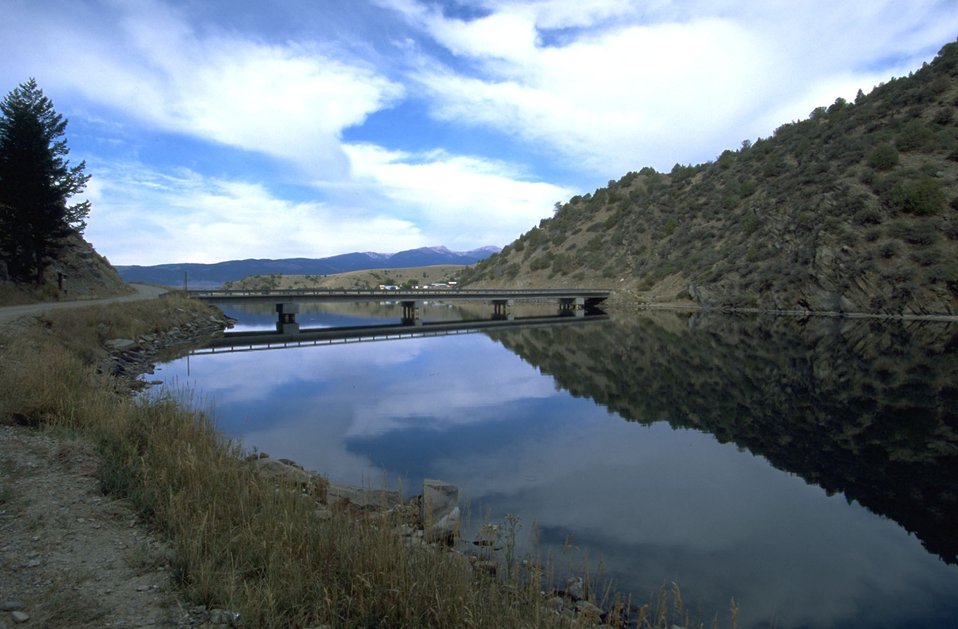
Bridge over the Madison River as is leaves Ennis Lake toward Bear Trap Canyon.